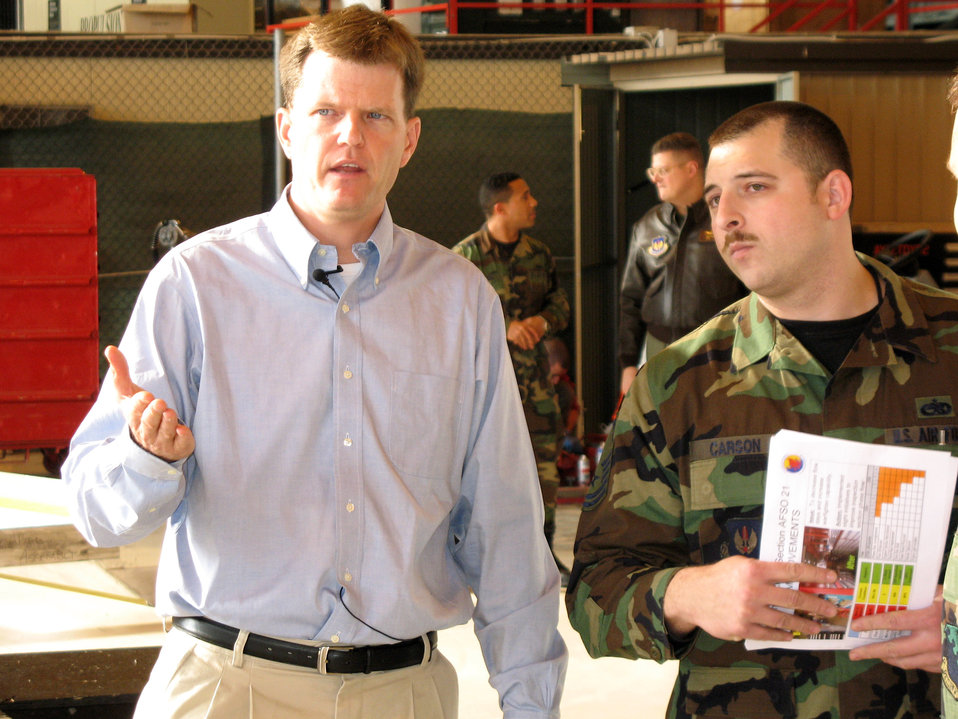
AFSO 21 @ Aviano

Dr. Ron Ritter, the secretary of the Air Force's special assistant for Air Force Smart Operations 21, speaks with Master Sgt. Ben Carson, Nov. 29, at the 31st Aircraft Maintenance Squadron hangar. He visited Aviano Air Base, Italy, Nov. 29 to see firsthand what improvements 31st AMX Airmen are making and how the improvements are being implemented. Sergeant Carson is the 31st AMX inspection chief.